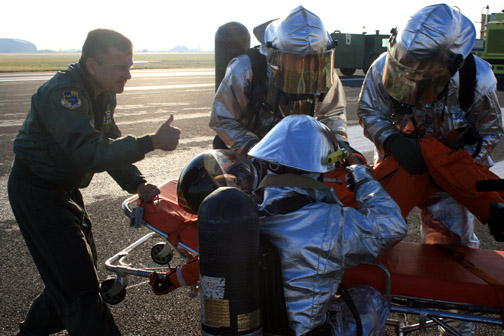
Fairford Airmen prepare for shuttle launch

Lt. Col. (Dr.) Tom Hoffman gives the thumbs-up to firefighters during a space shuttle recovery exercise Nov. 16. Royal Air Force Fairford, United Kingdom, is one of nine alternate landing sites for the space shuttle. If the launch was aborted, Airmen from the 420th Air Base Group would lead the rescue and recovery efforts. Colonel Hoffman is a flight doctor assigned to the 45th Space Wing at Patrick Air Force Base, Fla. The next shuttle launch is scheduled for Dec. 6.